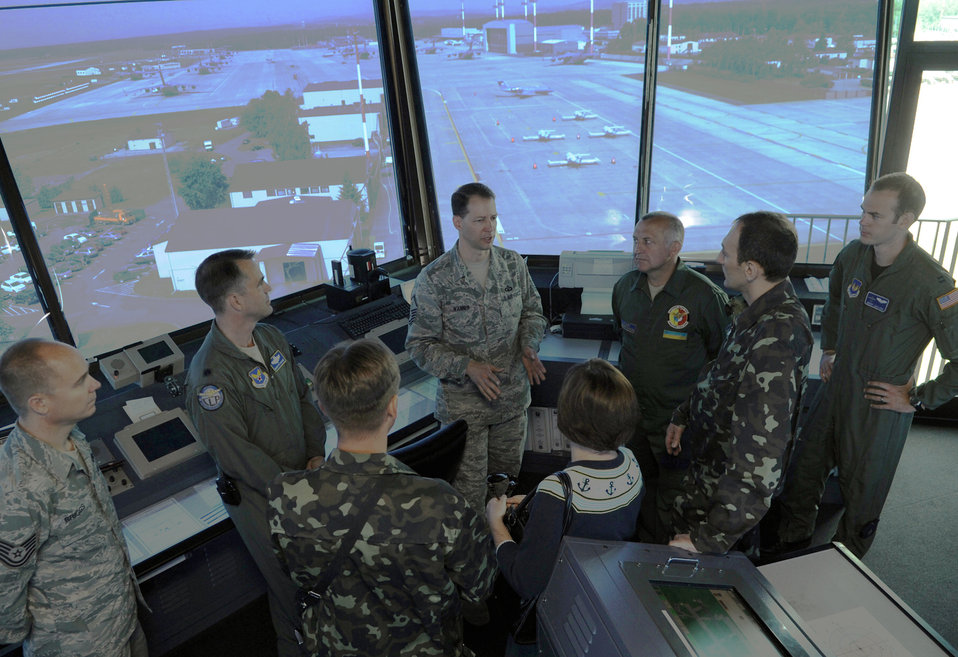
Ukrainian Airmen visit Ramstein

Master Sgt. Roy Wanner gives a tour of the air traffic control tower to Ukrainian air force members June 23, 2010, during a visit to Ramstein Air Base, Germany. The goal of the Ukrainian visit was to help advance military interoperability and build international partnerships. Sergeant Wanner is the 86th Operations Support Squadron air traffic control complex chief controller.